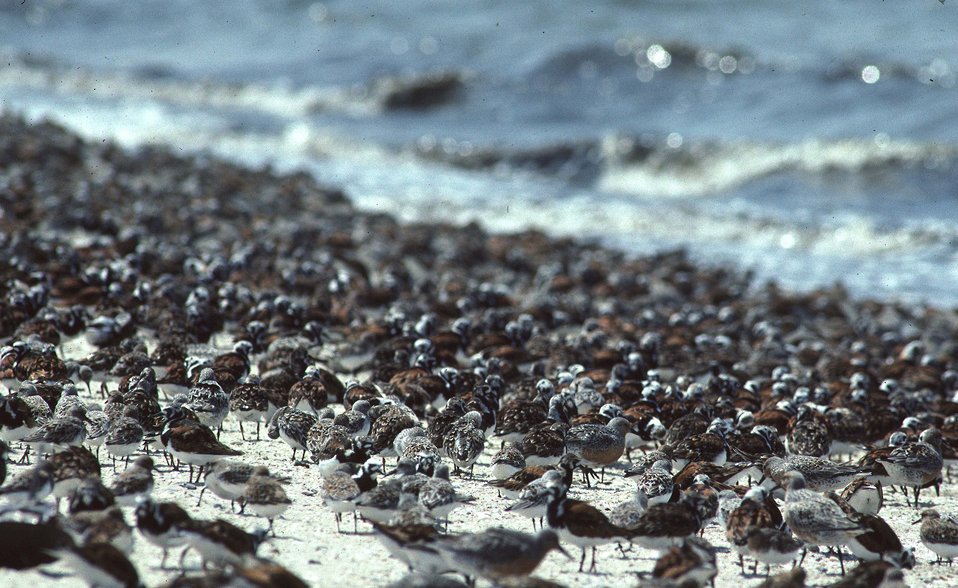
Shorebirds

Reed's Beach, NJ.